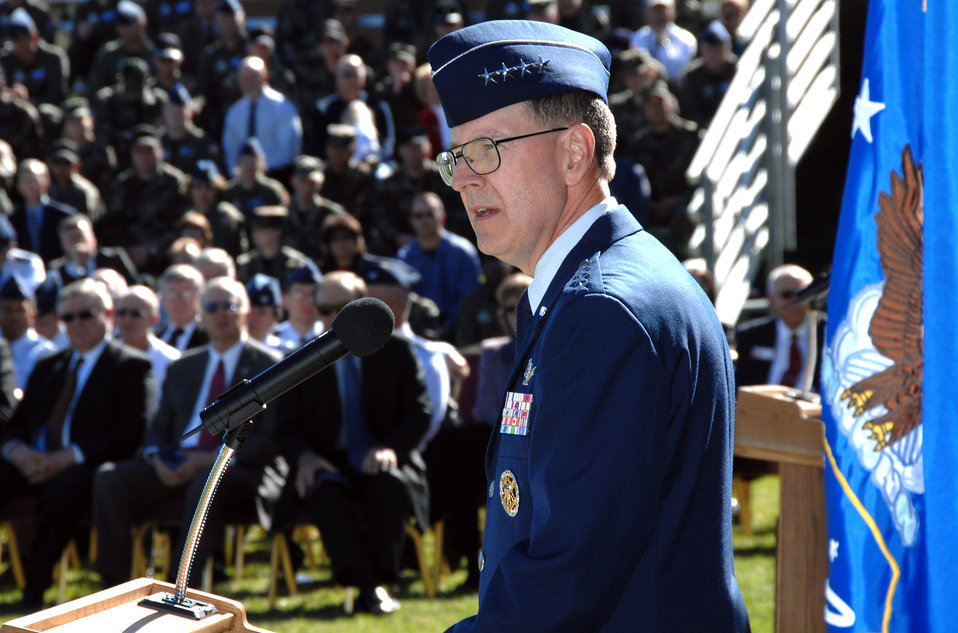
Space Command welcomes new leader

Gen. C. Robert